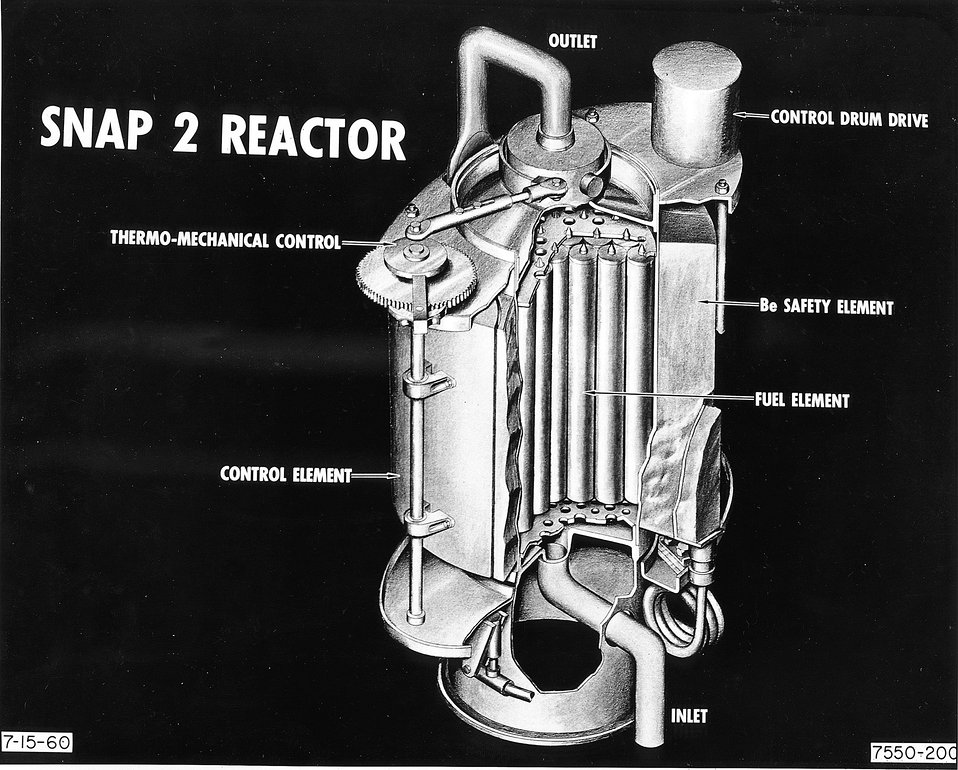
SNAP 2 reactor.. A lightweight, high temperature reactor to power instruments and radios in space.